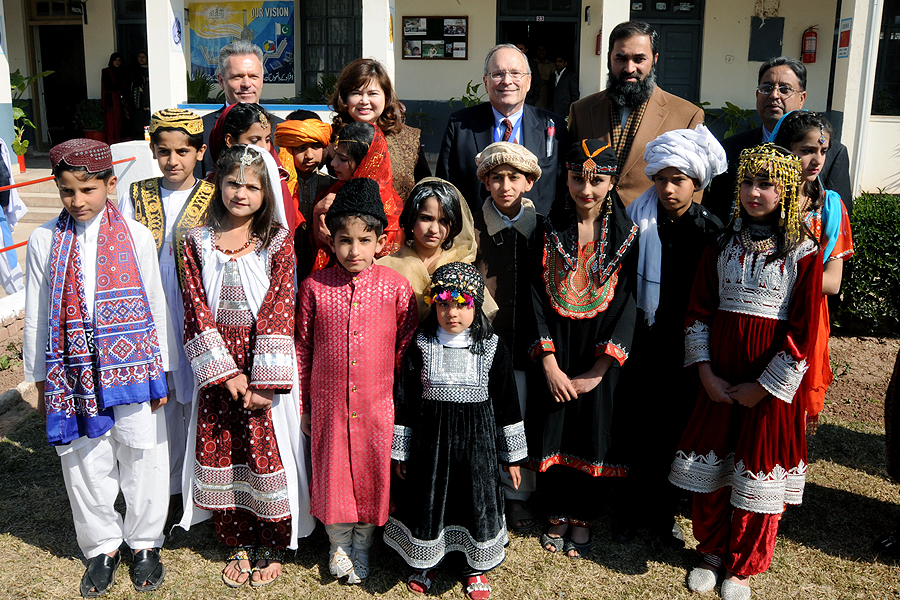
United States and Pakistan Launch the Pakistan Reading Project